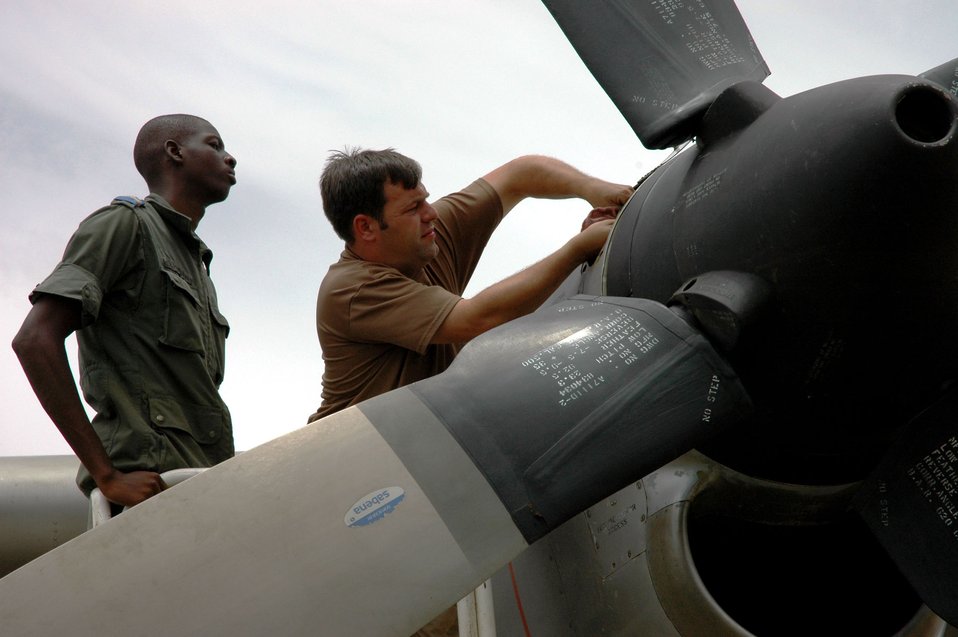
US/Niger Joint Training Exercise

NIAMEY, Niger -- A 6th Special Operations Squadron maintenance instructor examines components of a turboprop engine on the Niger Air Force C-130 here while a Nigerian maintainer learns some new techniques during a joint training exercise Aug. 15.